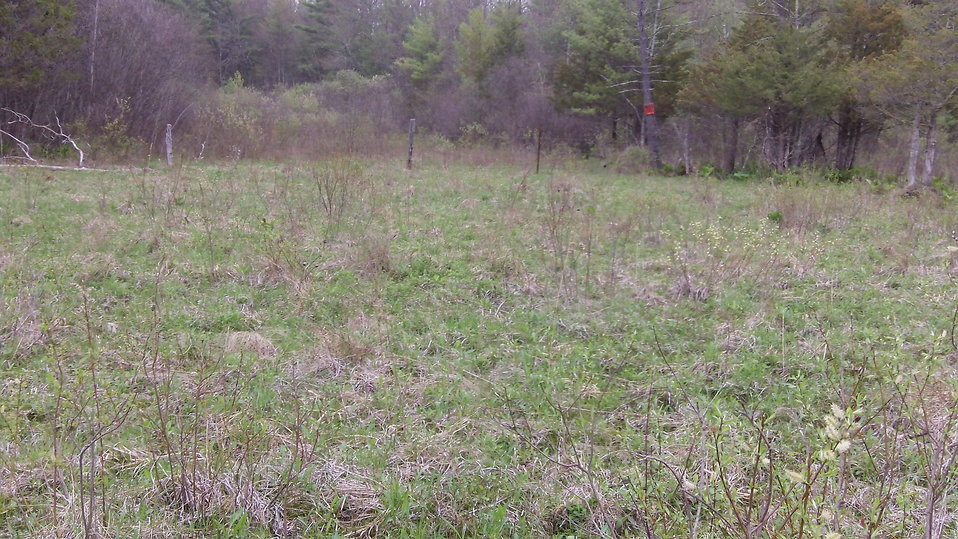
New England cottontail habitat

Activities such as the following create habitat that this cottontail will choose for its home:
patch cuts to release understory,
girdling poplar to encourage root suckering,
making brush piles and burrows,
planting multi-stemmed plants like dogwoods and alder,
seeding food for foraging,
and mowing older shrubs.

Habitat will take time to develop.